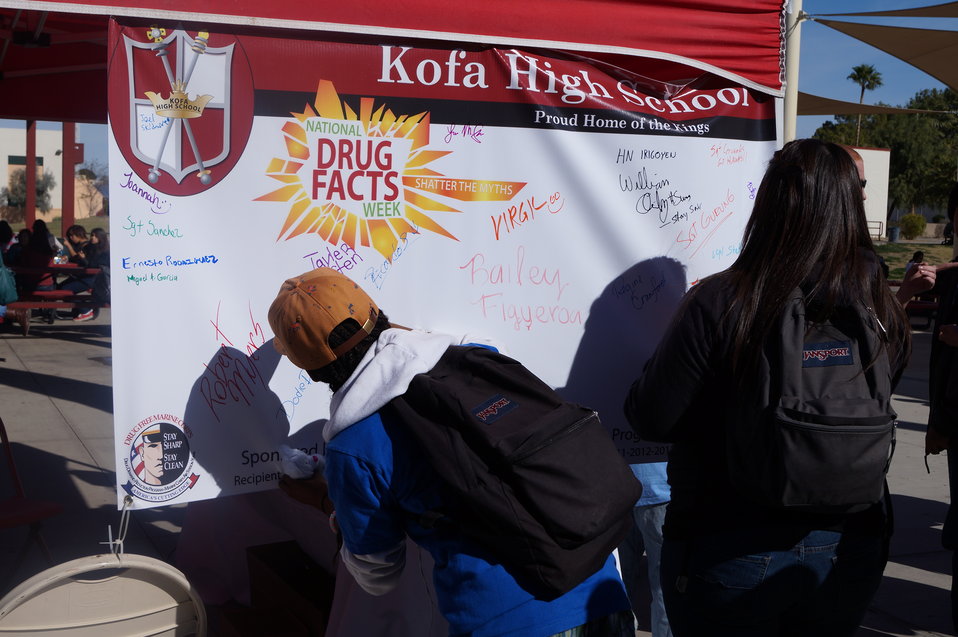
Nationa Drug Facts Week - KOFA HS

The Drug Demand Reduction Program out of Yuma Arizona held numerous events at local schools to support NIDA's National Drug Facts Week, Jan. 27-Feb. 2 2014. Teens participated in drug awareness games, and helped to Shatter the Myths about teen substance abuse.